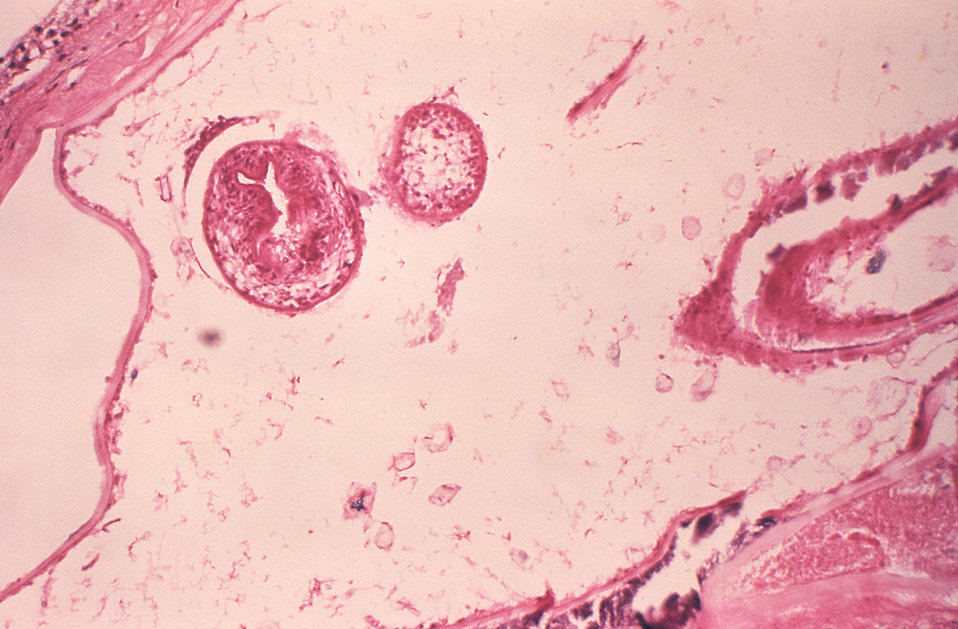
This micrograph is from a larval lesion on a vole experimentally infected with the parasite Echinococcus multilocularis.